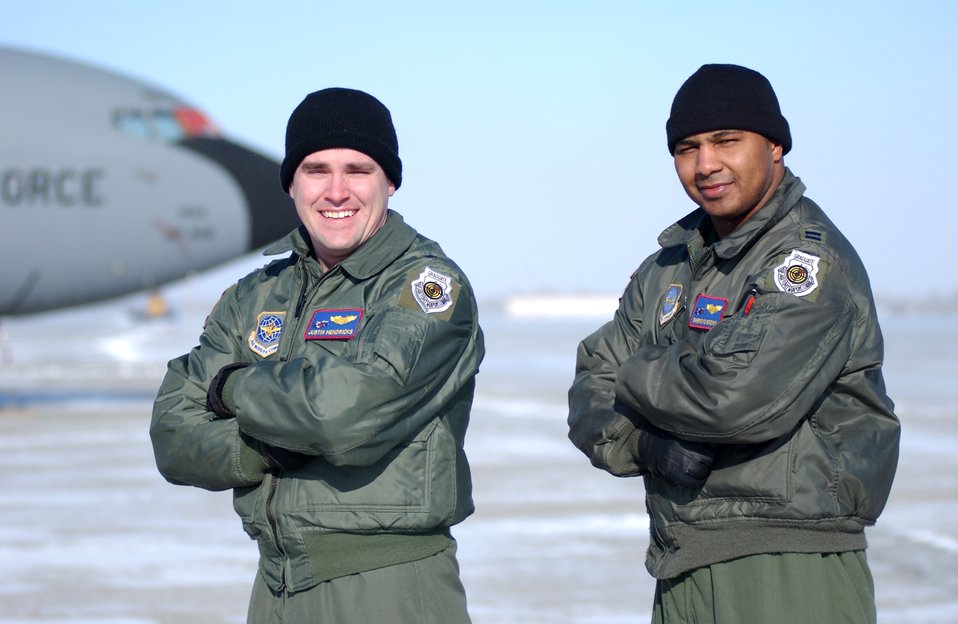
Thinking of tankers tactically

Capts. Justin Hendricks (left) and Sheroyd Brown show off their newly earned Air Force Weapons School patches Jan. 31 at Grand Forks Air Force Base, N.D. As two of the wing's five weapons officers, the captains are responsible for training aircrews on advanced KC-135 Stratotanker tactics. Both are instructor pilots with the 319th Operations Support Squadron.